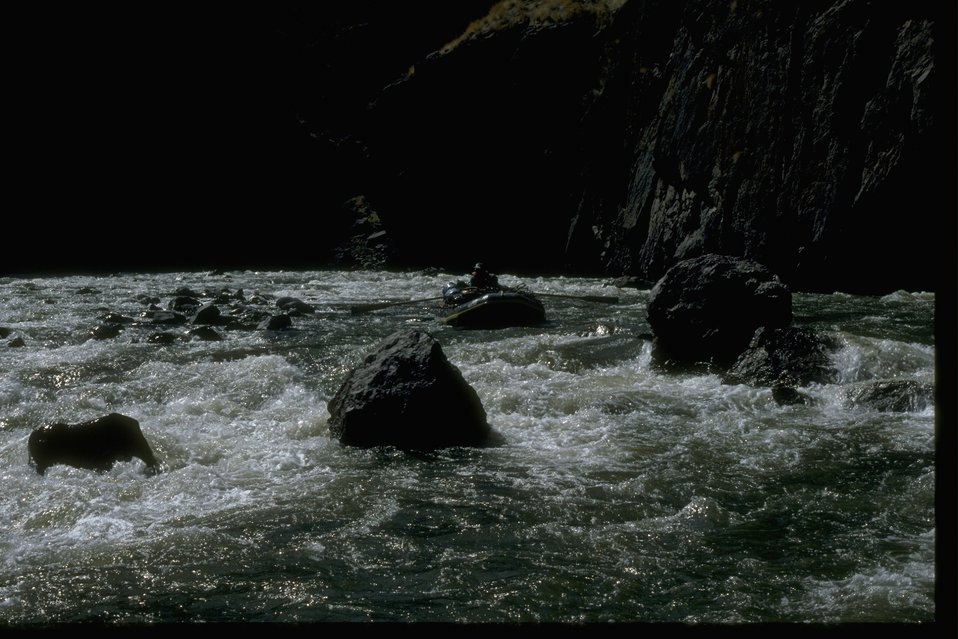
Montgomery Rapids in the Lower Owyhee River. OR 3-110